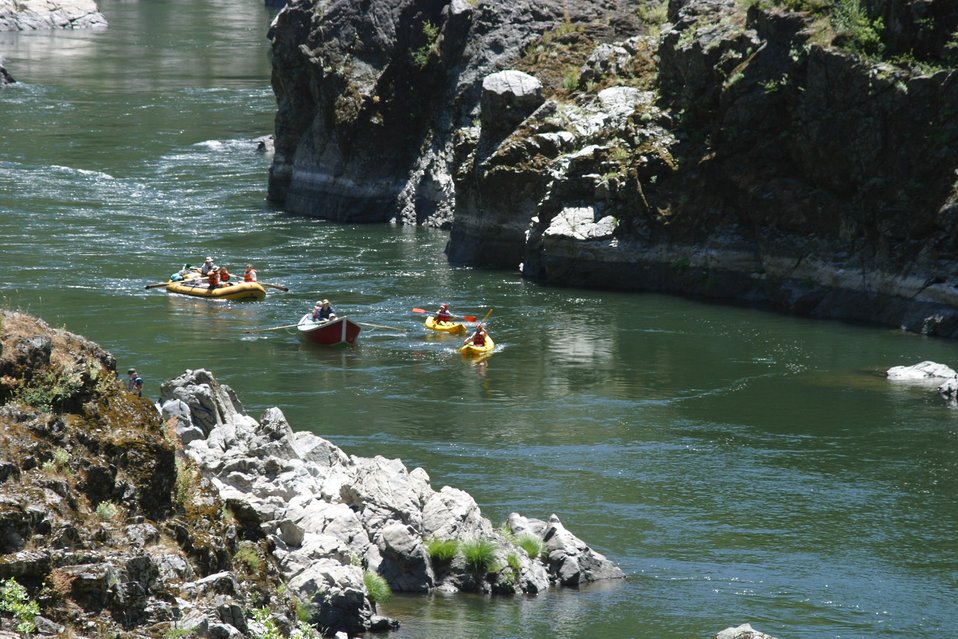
Boaters just above Blossom Rapids.